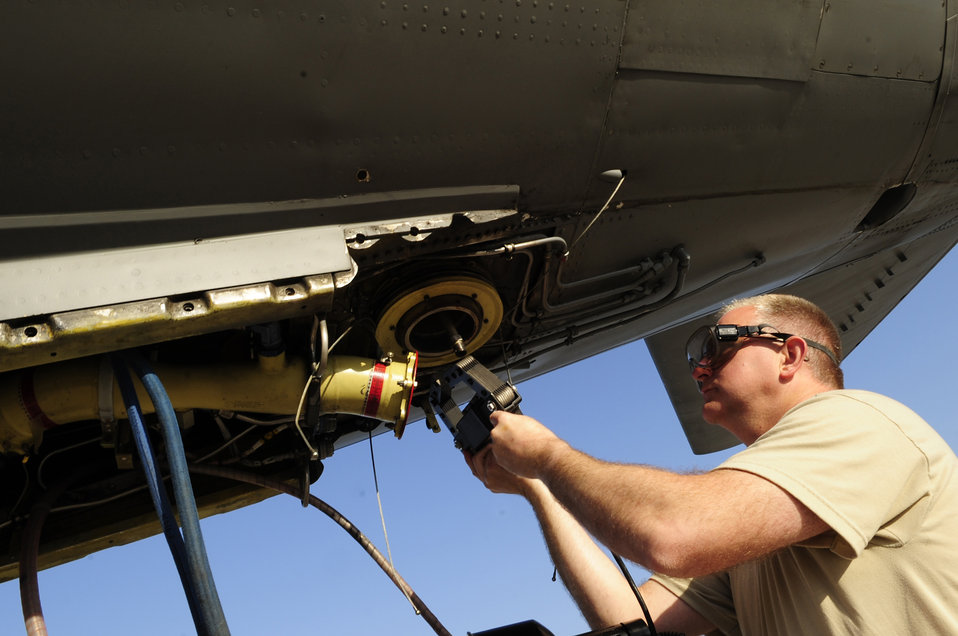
Leaders describe path to peace in Libya

Tech. Sgt. David Sparkman magnetizes a boom strut bolt on a KC-135 Stratotanker April 12, 2011, during a magnetic particle inspection. Sergeant Sparkman is from the Pennsylvania Air National Guard’s 171st Air Refueling Wing and is deployed with the 313th Air Expeditionary Wing at an air base in Western Europe supporting Operation Unified Protector, a NATO-led mission in Libya, to protect civilians and civilian-populated areas under threat of attack. The 313th AEW provides aerial refueling to U.S. and coalition aircraft using KC-135 Stratotankers and KC-10 Extenders.